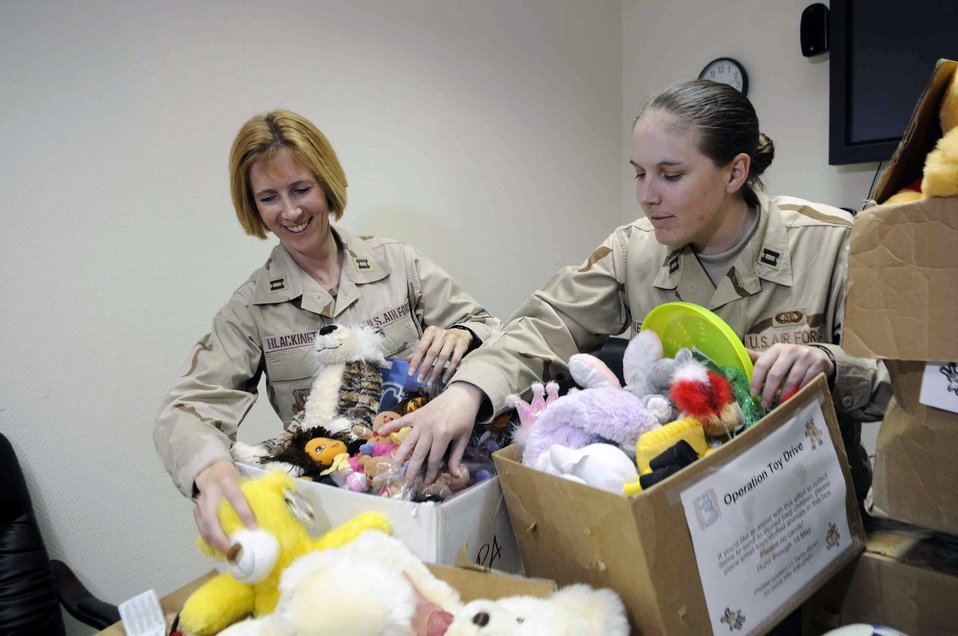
Operation Toy Drive to bring joy to Iraqi orphans

Capt. Nora Nelson and Capt. Carol Blackington sort through the toys collected by a group of about 40 volunteers May 16 at a Southwest Asian air base. The toys will be donated to Iraqi orphans.